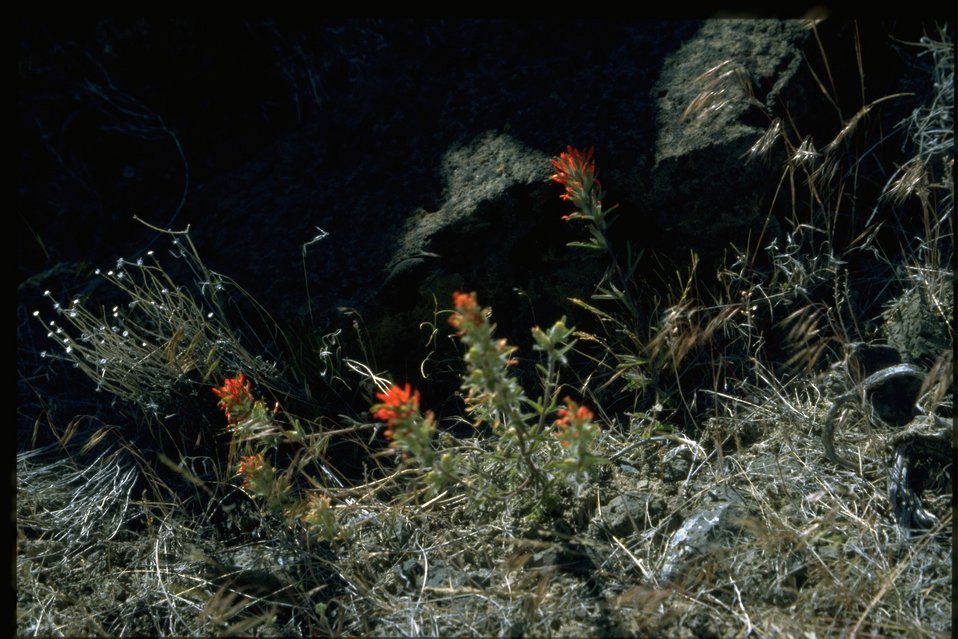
Farshot of desert paintbrush (Castilleja chromosa).